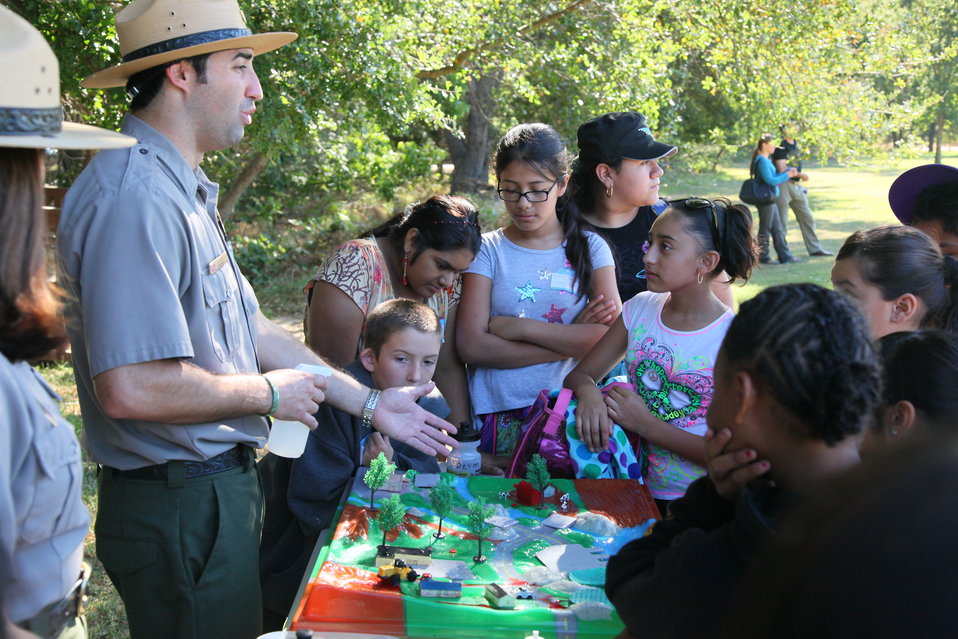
America’s Great Outdoors event at the Effie Yeaw Nature Center

U.S. Army Corps of Engineers park ranger Gary Basile demonstrates the value of wetlands to students from Maple Elementary School at the Effie Yeaw Nature Center in Carmichael, Calif., Sept. 27, 2011. The event was in support of President Barack Obama’s America’s Great Outdoors Initiative, established in April 2010, to reconnect the American people with the outdoors.